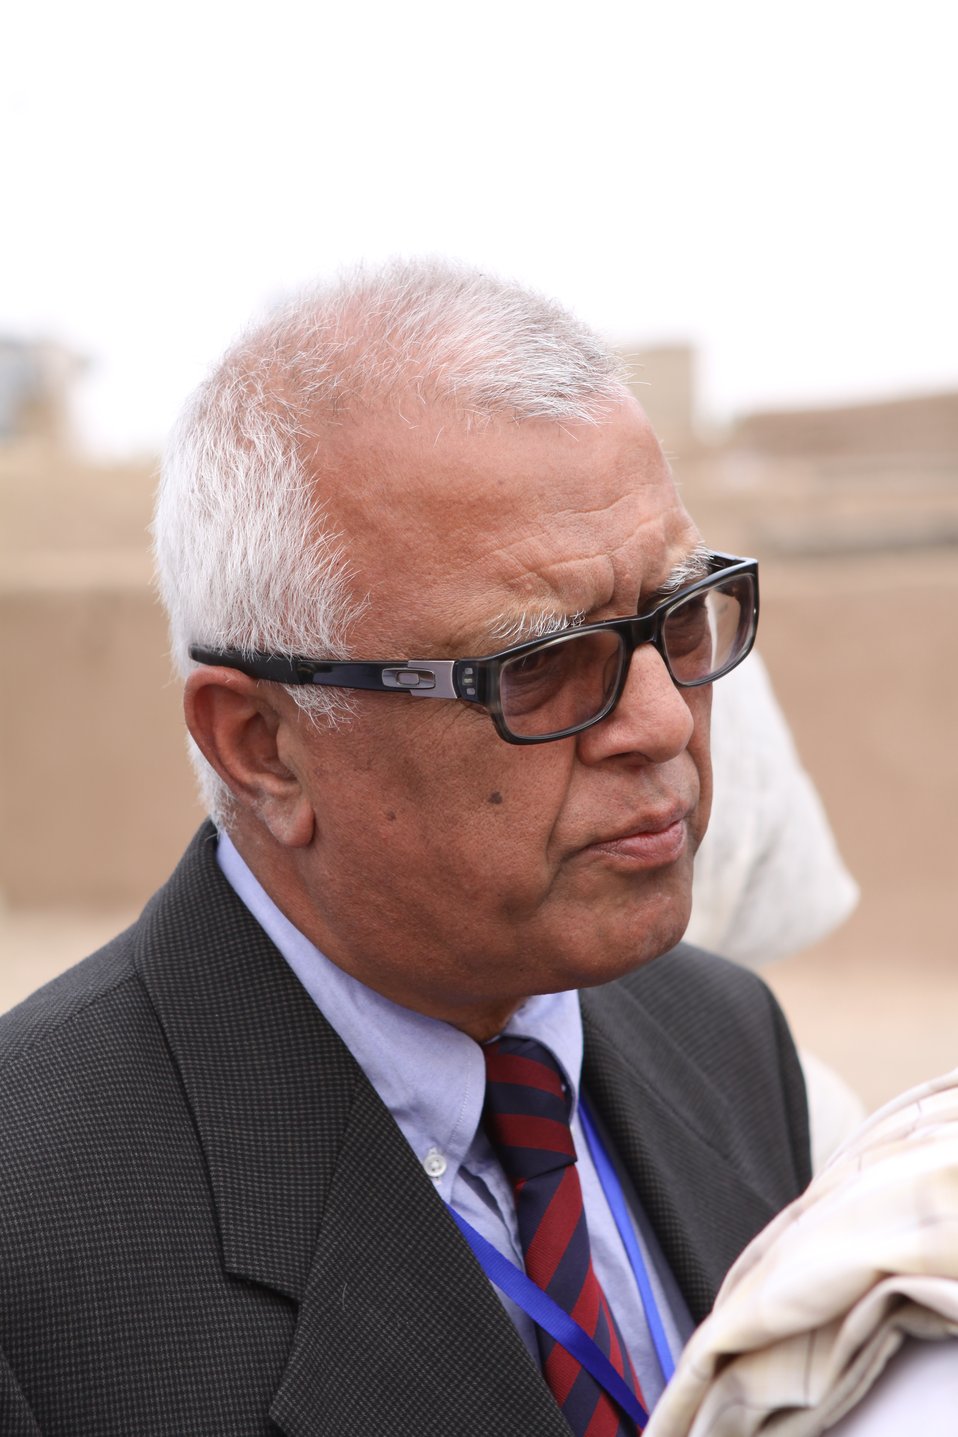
100525 Hirat Marble Conference 638